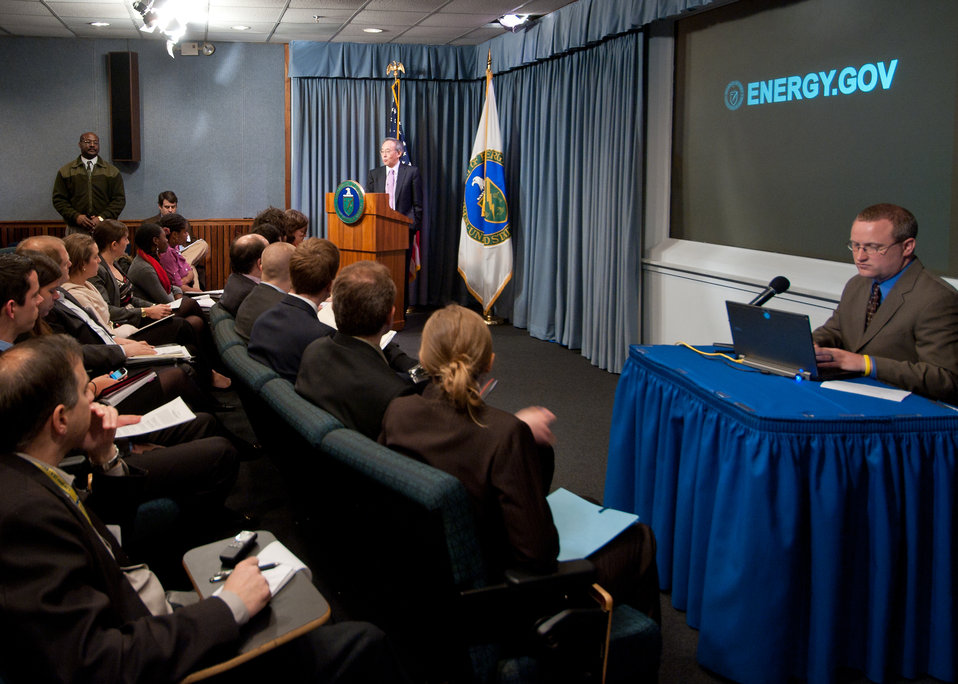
Energy Matters Online Townhall 2 of 5

Secretary Steven Chu hosts an online town hall to discuss President Obama's clean energy and innovation agenda. Department of Energy Director of Public Affairs Dan Leistikow serves as moderator and accepts questions for the Secretary from guests in the room.